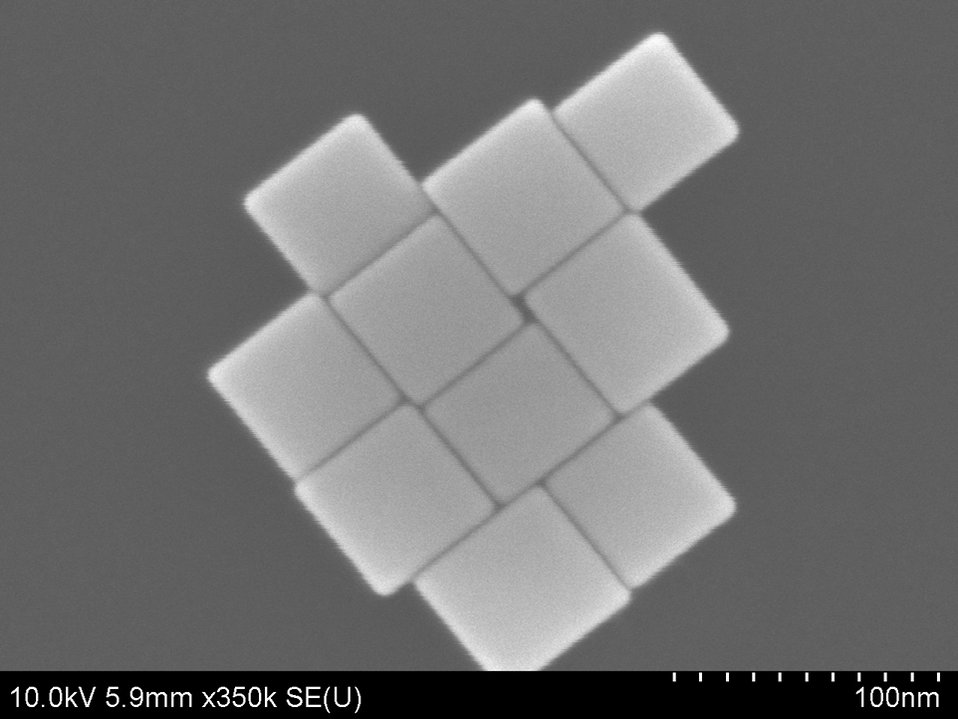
Nanocubes

These electron microscope images show perfect-edged nanocubes produced in a one-step process created at NIST that allows careful control of the cubes size, shape and composition.